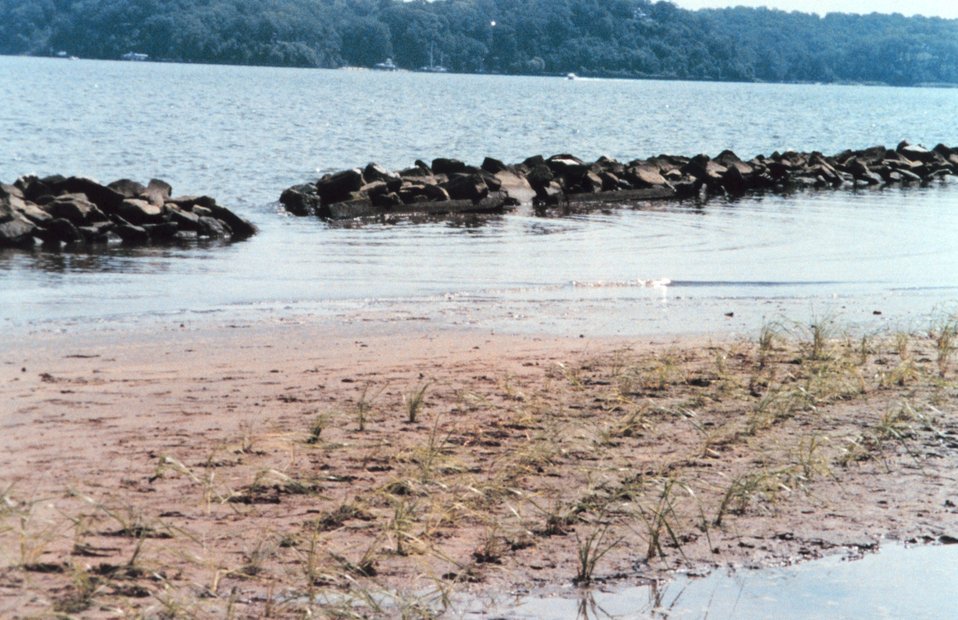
Efforts to preserve shoreline along the Severn River include installation of segmented jetties to diffuse wave energy.